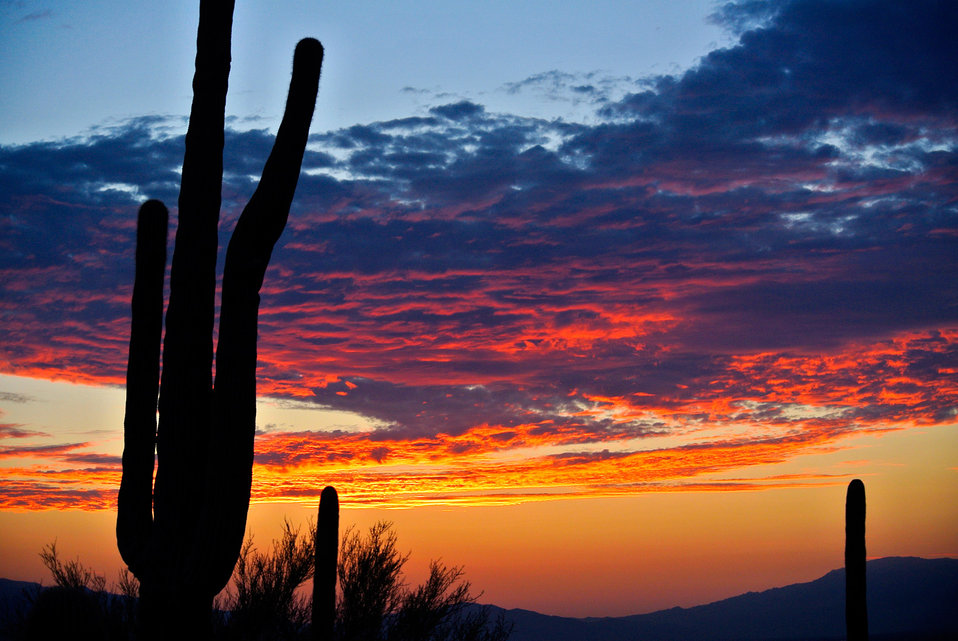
Cactus sunrise.